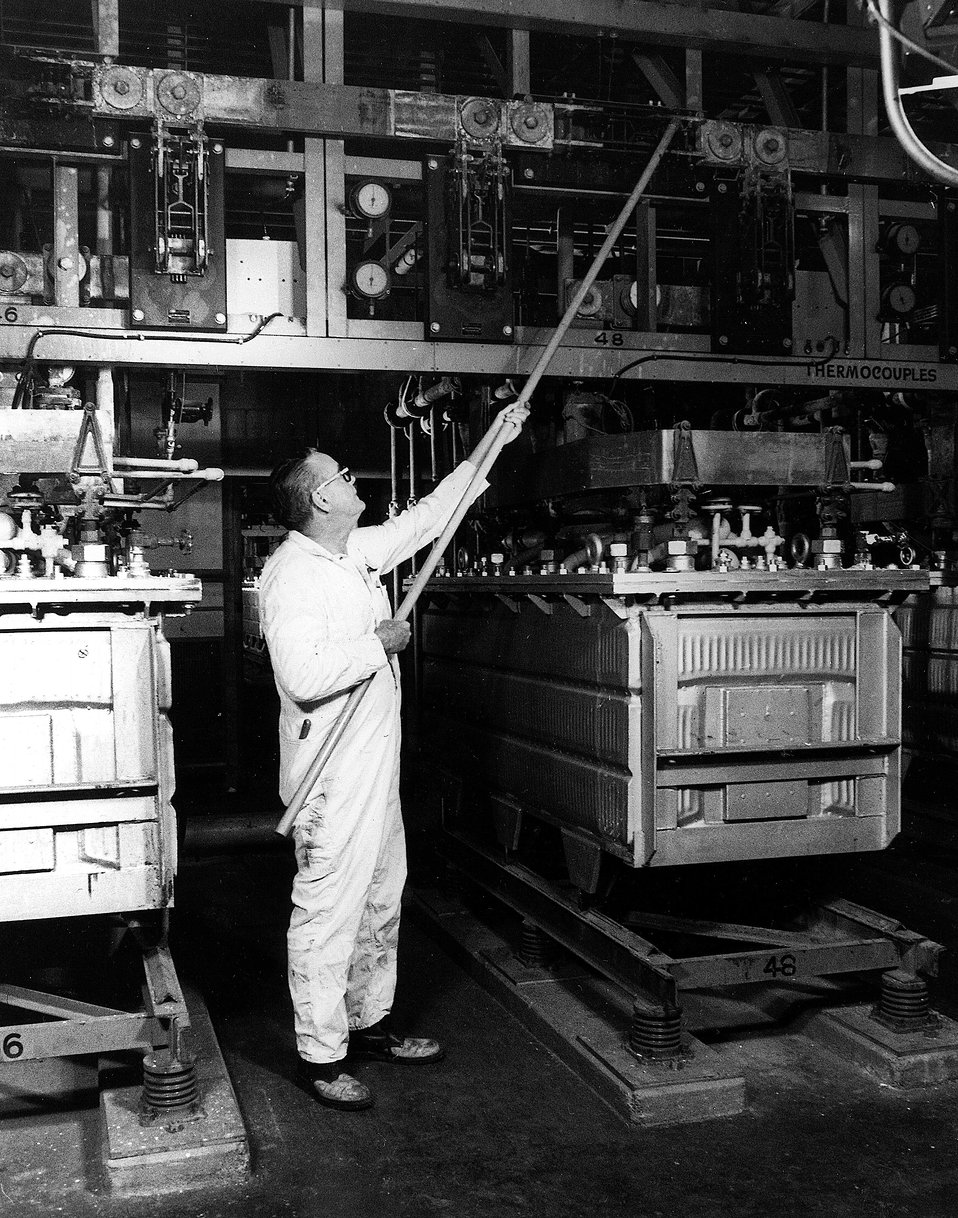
The U.S. Energy Research and Development Administration maintains a uranium feed material production facility at its Paducah (Kentucky) Gaseous Diffusion Plant. Circa 1972.